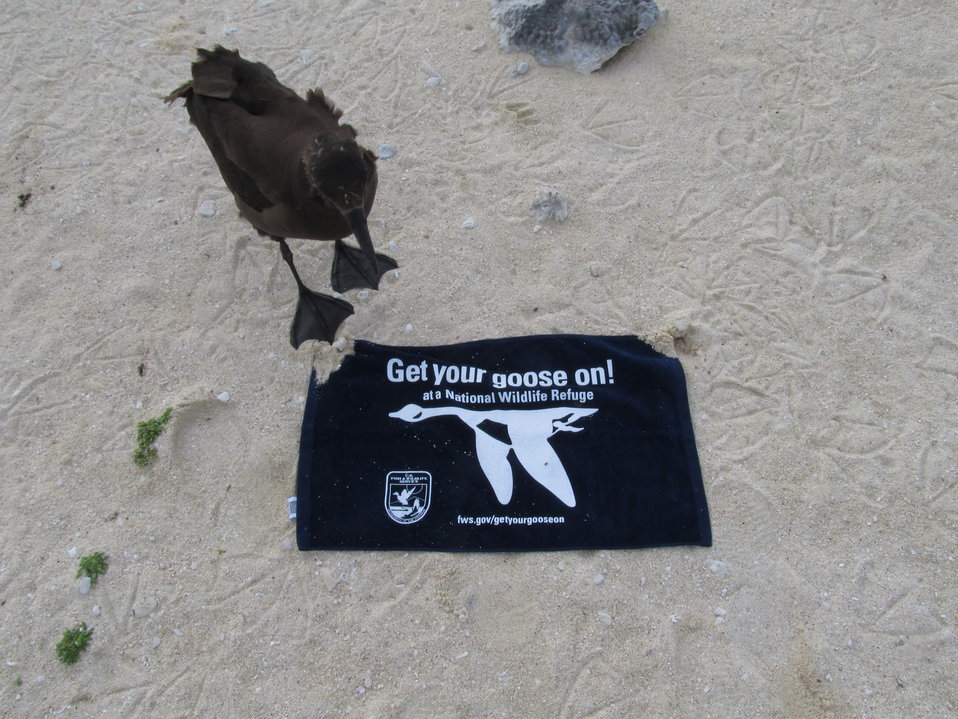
Get Your Goose On! - Albatross Style

Photo taken at Laysan Island in the Papahanaumokuakea Marine National Monument, Hawaiian Islands National Wildlife Refuge. Laysan is located approximately 800 miles northwest of Honolulu, Hawaii and is a remote field camp staffed year round for habitat restoration and population monitoring.